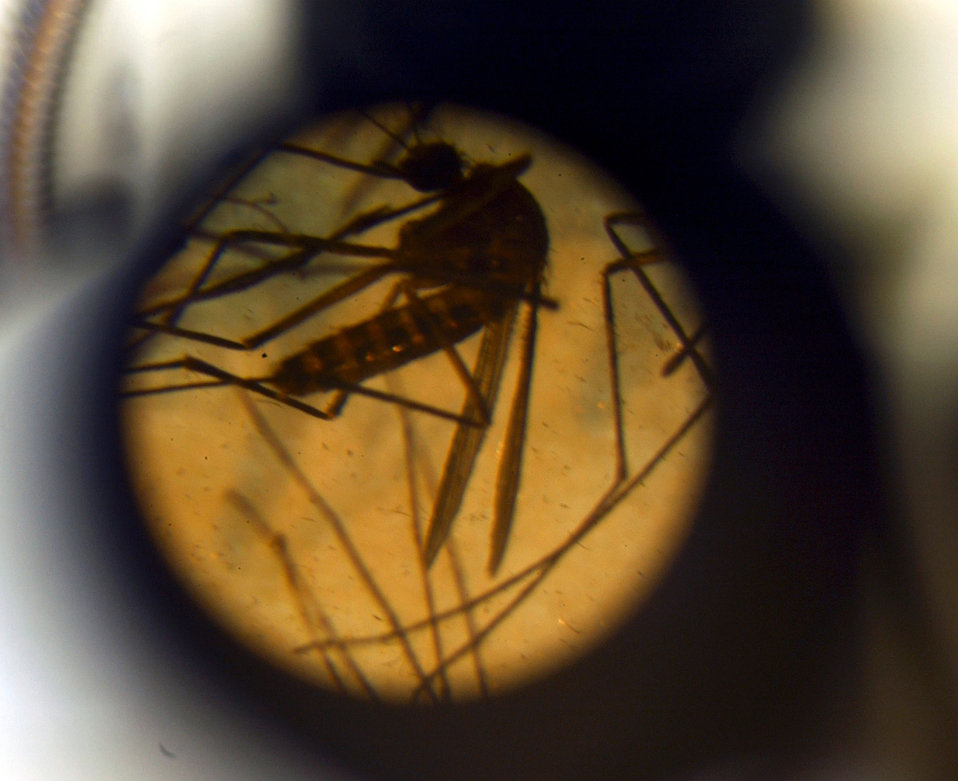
Under the microscope

FILE PHOTO -- A group of frozen mosquitoes is viewed through the eyepiece of an entomologist's microscope. Mosquitoes are sorted into three different species and by gender. They will be examined for West Nile Virus.